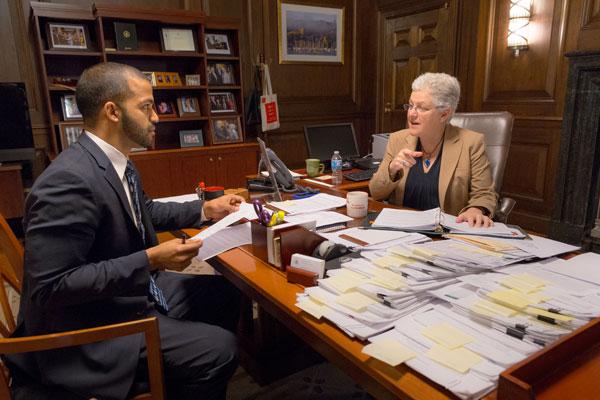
Day in the Life - April 4, 2014

8:07 am - McCarthy reviews upcoming remarks with speechwriter Kevin Samy. The papers on her desk cover the broad gamut of public health and environmental issues the agency oversees on a daily basis. (3/12)